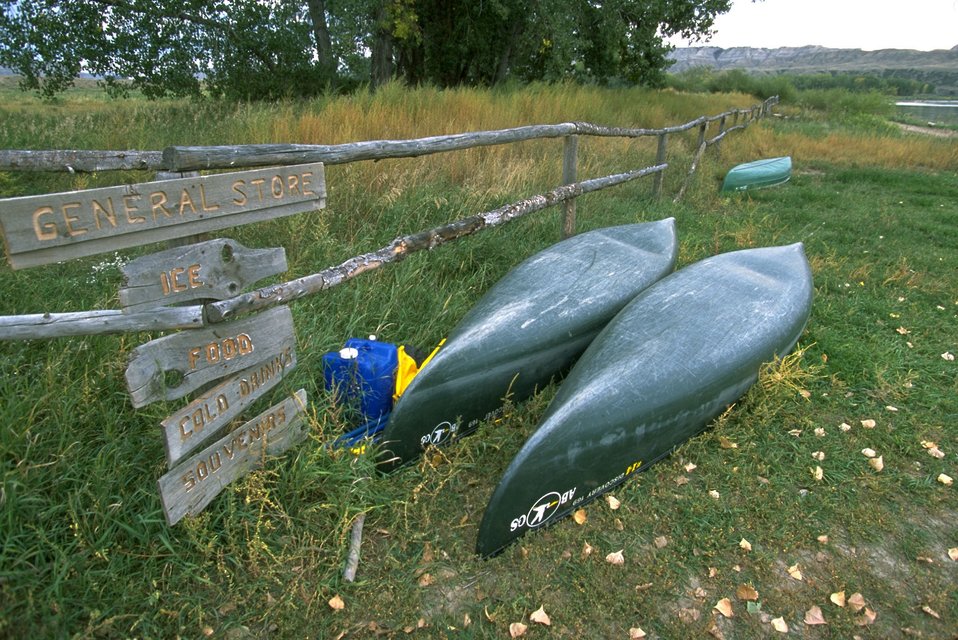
Boat launch at Judith Landing